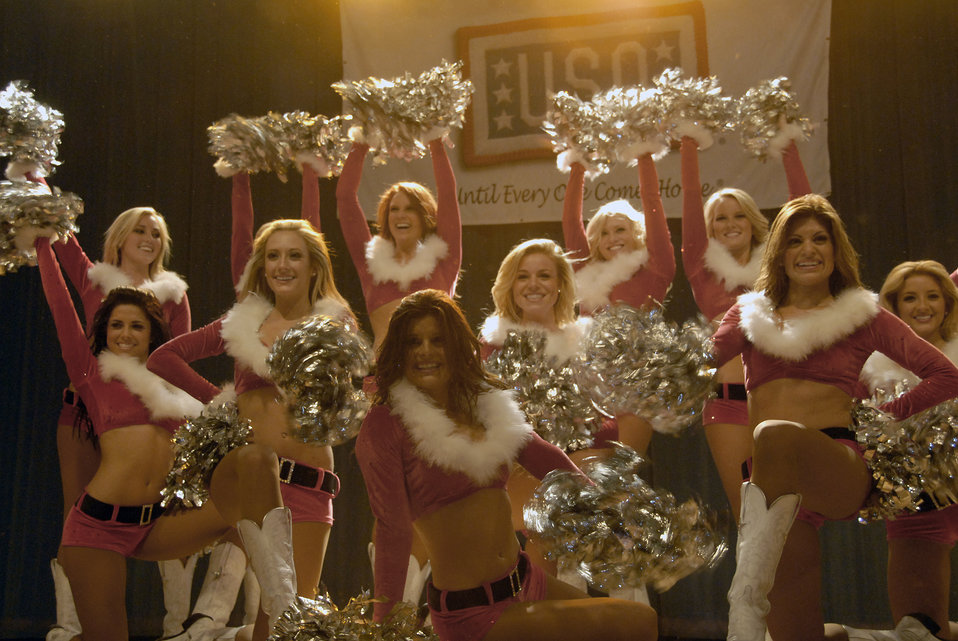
Dallas Cowboys cheerleaders perform Dec. 29, 2010, during a visit to Osan Air Base, South Korea.